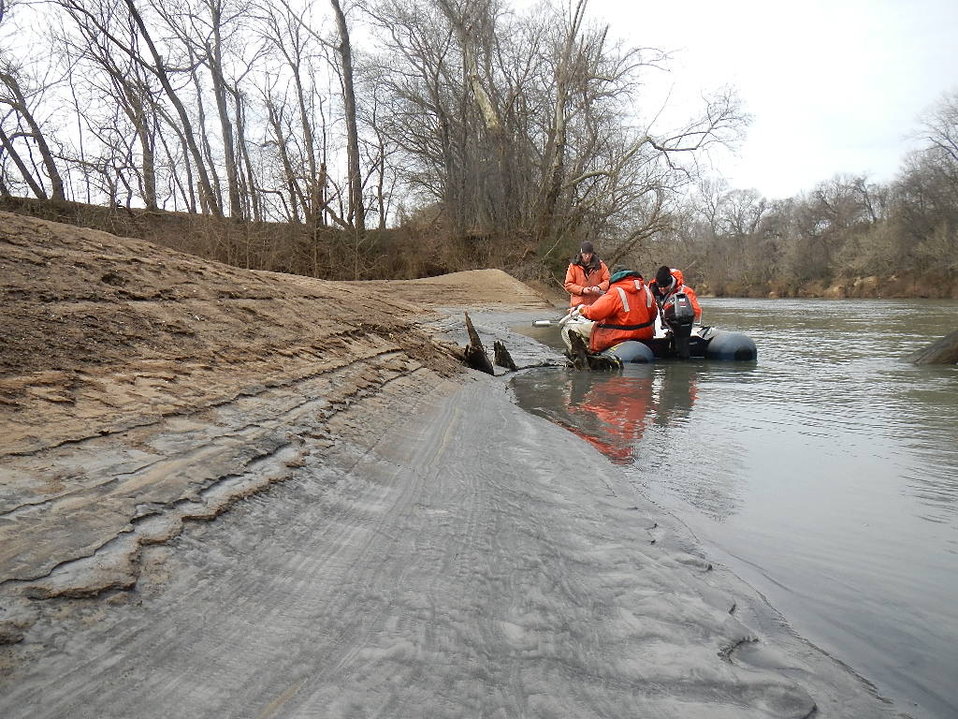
Coal ash bar sampling on Dan River.

Tom Augspurger (l), USFWS, taking core sample during February 8th reconnaissance of Dan River coal ash spill. (l-r) Tom Augsperger, USFWS, John Fridell, USFWS, Rick Smith, Duke Energy.